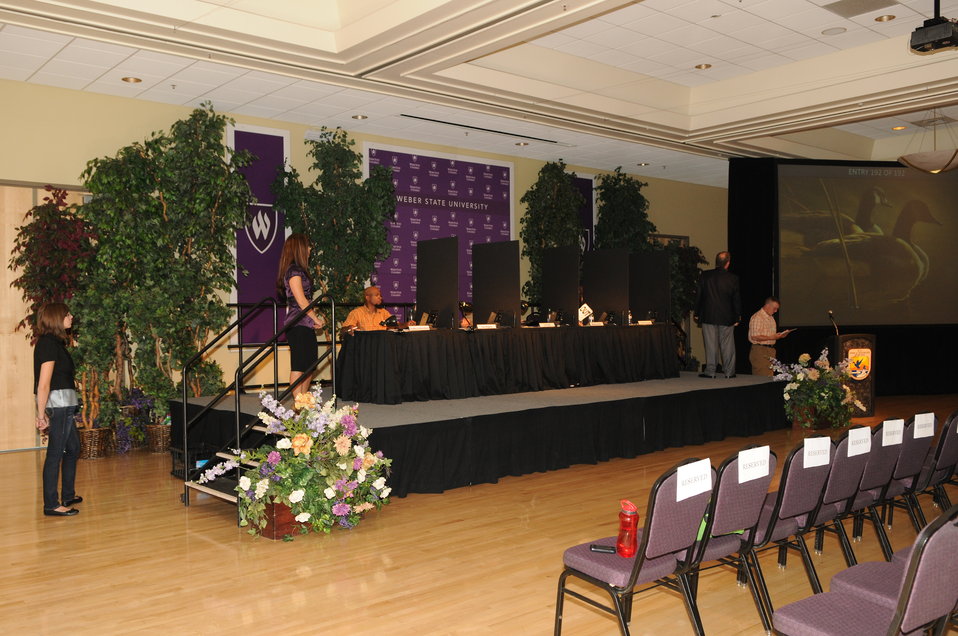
The Stage

The U.S. Fish & Wildlife Service sponsored the 2012 Federal Duck Stamp Art Contest September 28 and 29 in Ogden, Utah, at Weber State University. A panel of five judges was responsible for choosing the art work used to design the 2013-2014 Migratory Bird Hunting and Conservation Stamp.